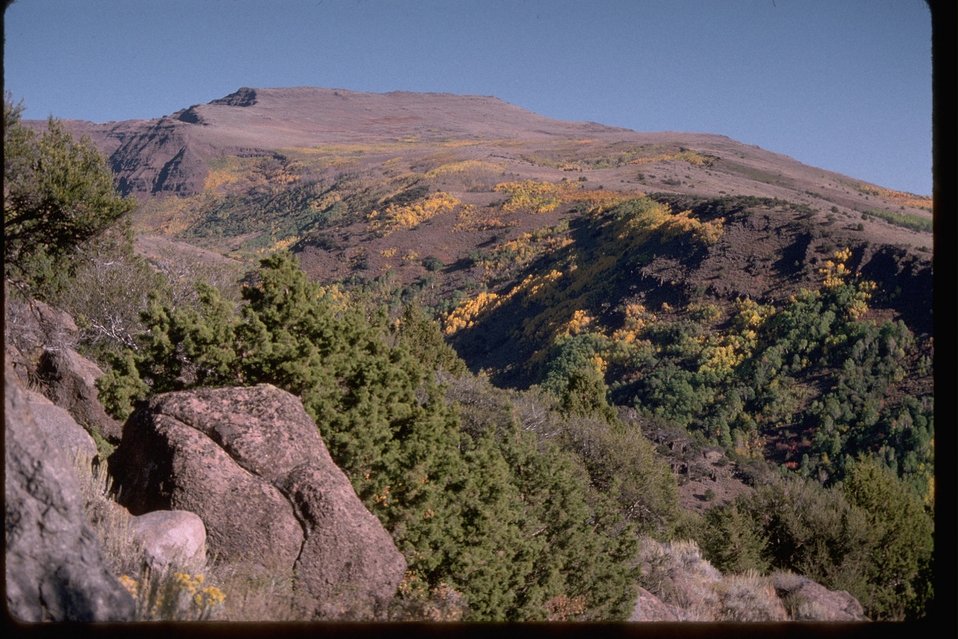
Big Indian Creek and Ankle Mountain area with fall colors, from Steens Loop road back country byway.